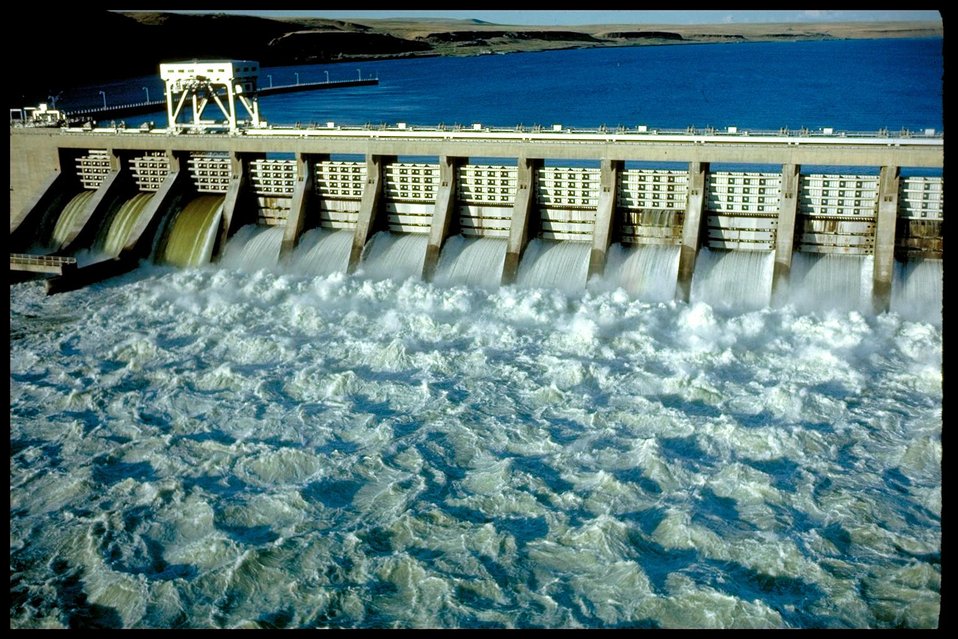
THE MCNARY DAM ON THE COLUMBIA RIVER IN OREGON.

THE MCNARY DAM IS ONE OF THE FEDERAL DAMS PROVIDING POWER TO THE PACIFIC NORTHWEST. THE BONNEVILLE POWER ADMINISTRATION, A FEDERAL AGENCY CREATED BY CONGRESS IN 1937 HAS AUTHORITY TO MARKET AND DELIVER THE POWER FROM SUCH DAMS. BPA SUPPLIES MORE THAN HALF THE ELECTRICITY CONSUMED IN THE PACIFIC NORTHWEST.